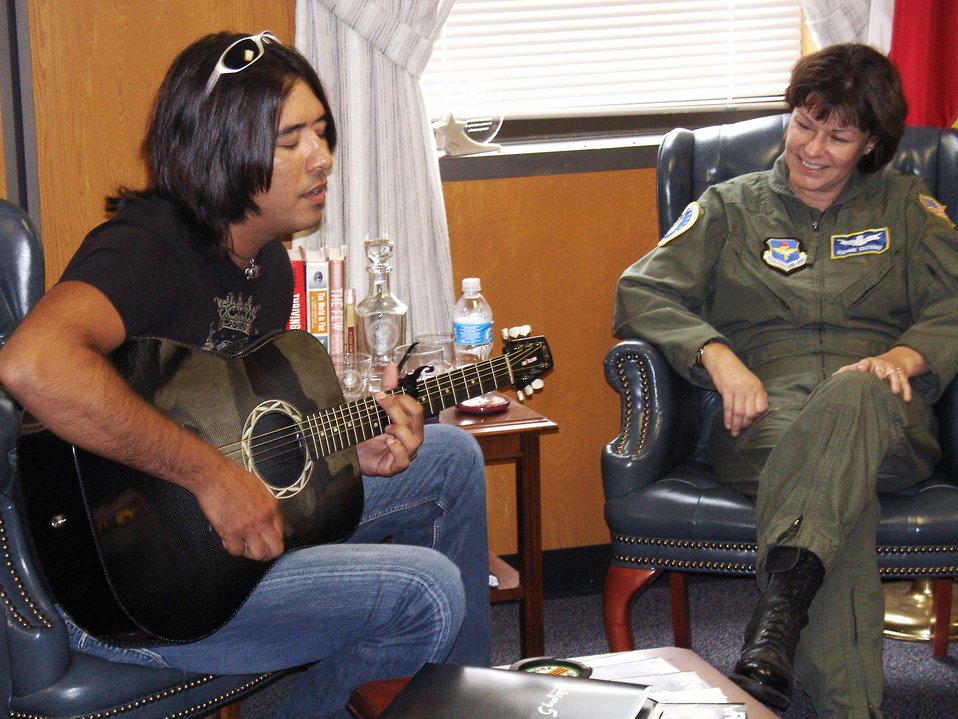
Country music singer encourages new recruits to stay focused

Donovan Chapman performs for Brig. Gen. Suzanne Vautrinot and her staff during a July 18 visit to Air Force Recruiting Service at Randolph Air Force Base, Texas. General Vautrinot is commander of AFRS. Mr. Chapman is a country music singer and recorded two public service announcements of encouragement to servicemembers.